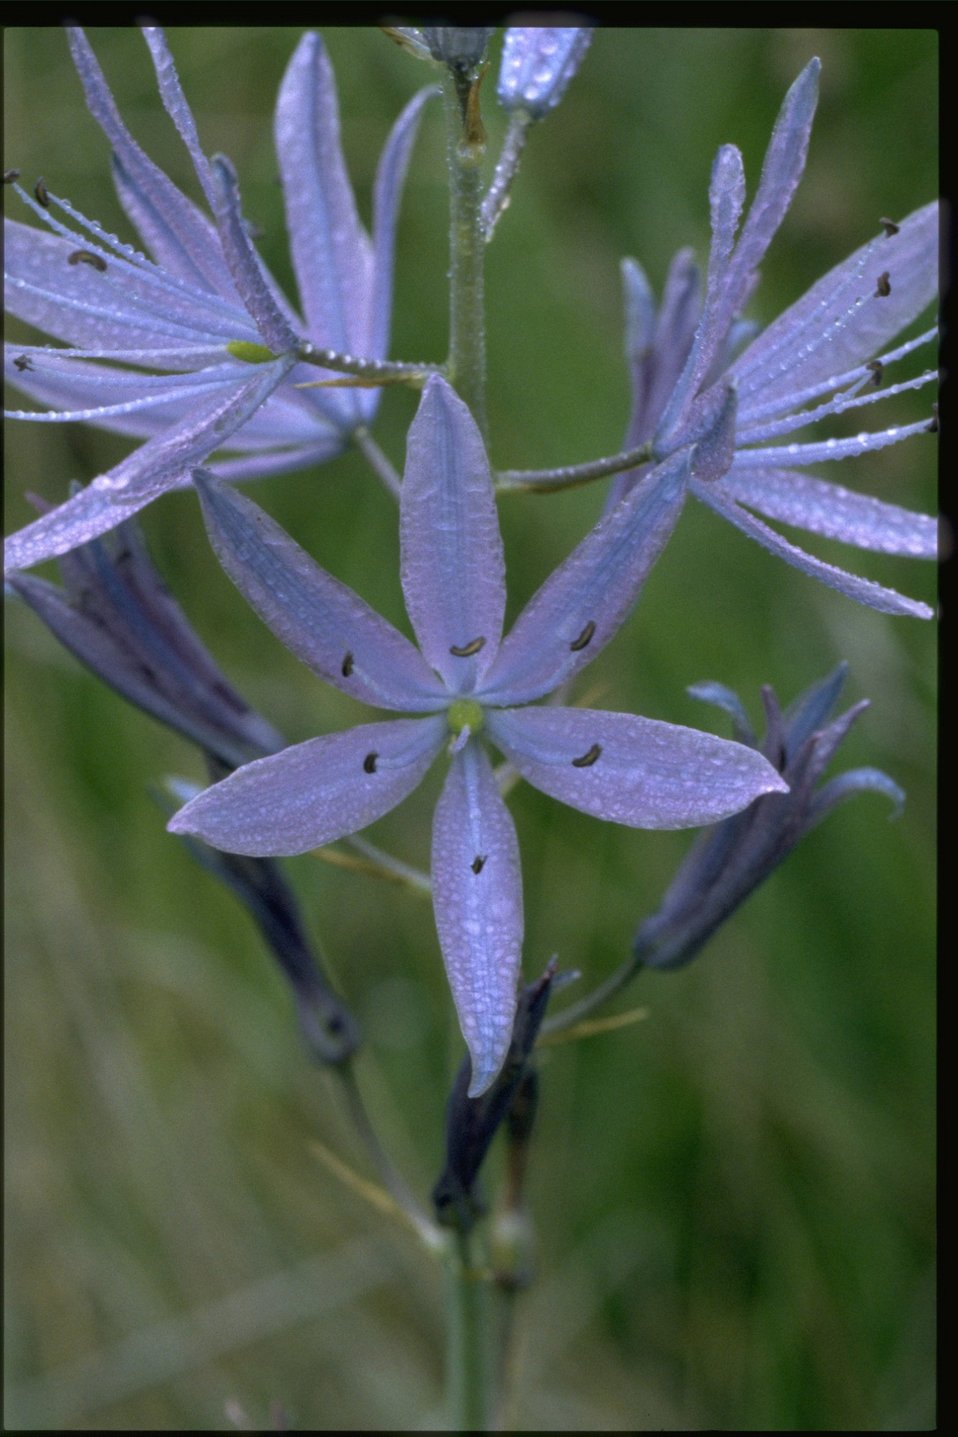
Closeup shot of Camassia quamash